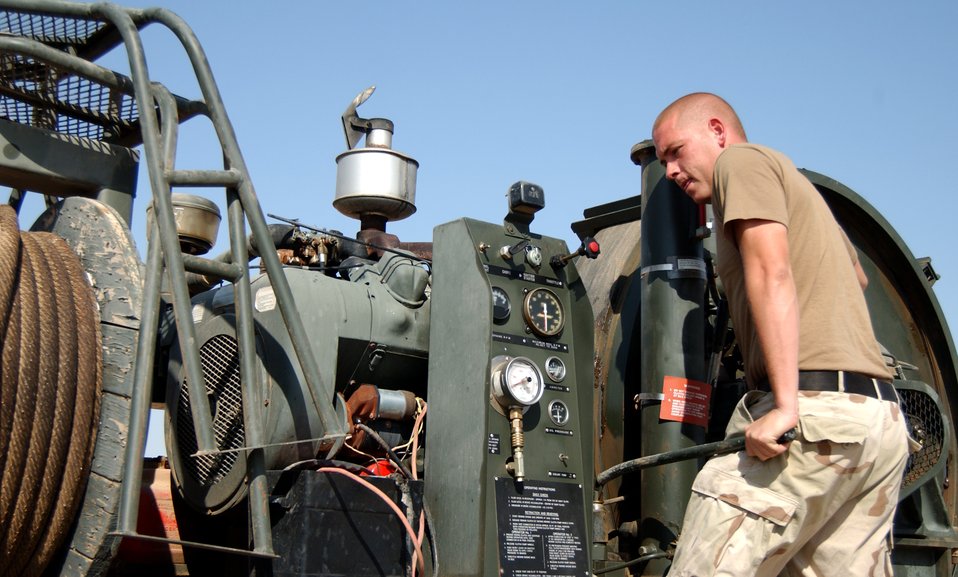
How to catch a falcon by the tail

Staff Sgt. Robert Neubert performs routine maintenance on the mobile aircraft arresting system July 26 at Balad Air Base, Iraq. Sergeant Neubert is assigned to the . 332nd Air Expeditionary Civil Engineer Squadron.